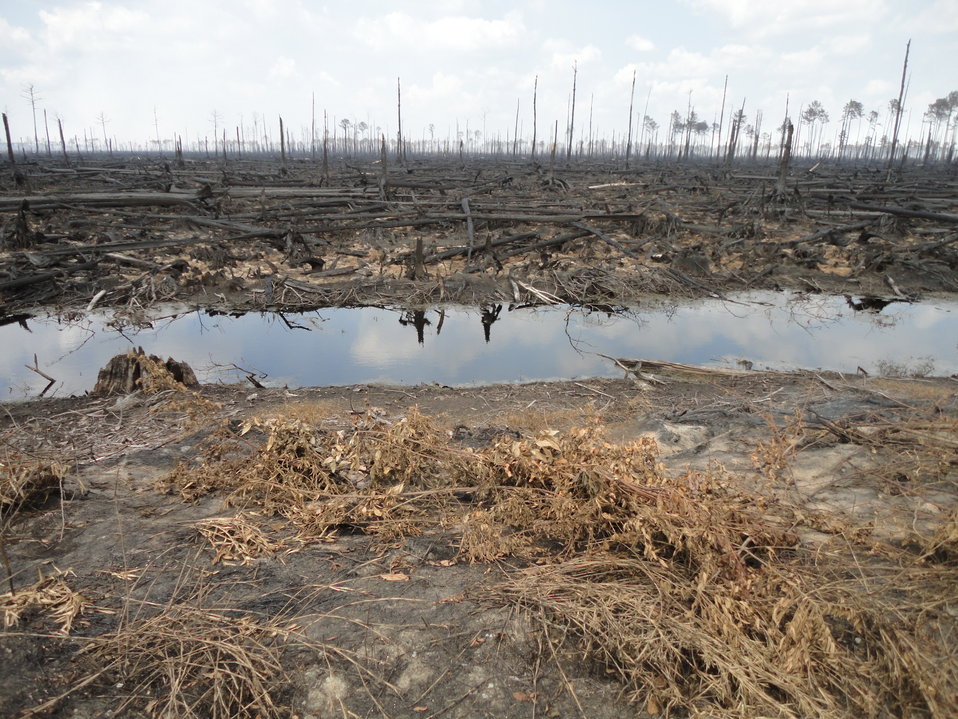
Fire along swamp ditch

Suffolk, VA, Aug. 2011: Ditches at the Lateral West Fire on Great Dismal Swamp National Wildlife Refuge will be flooded with water pumped from Lake Drummond. A sprinkler system will spray water into the fire to flood deep peat fires.